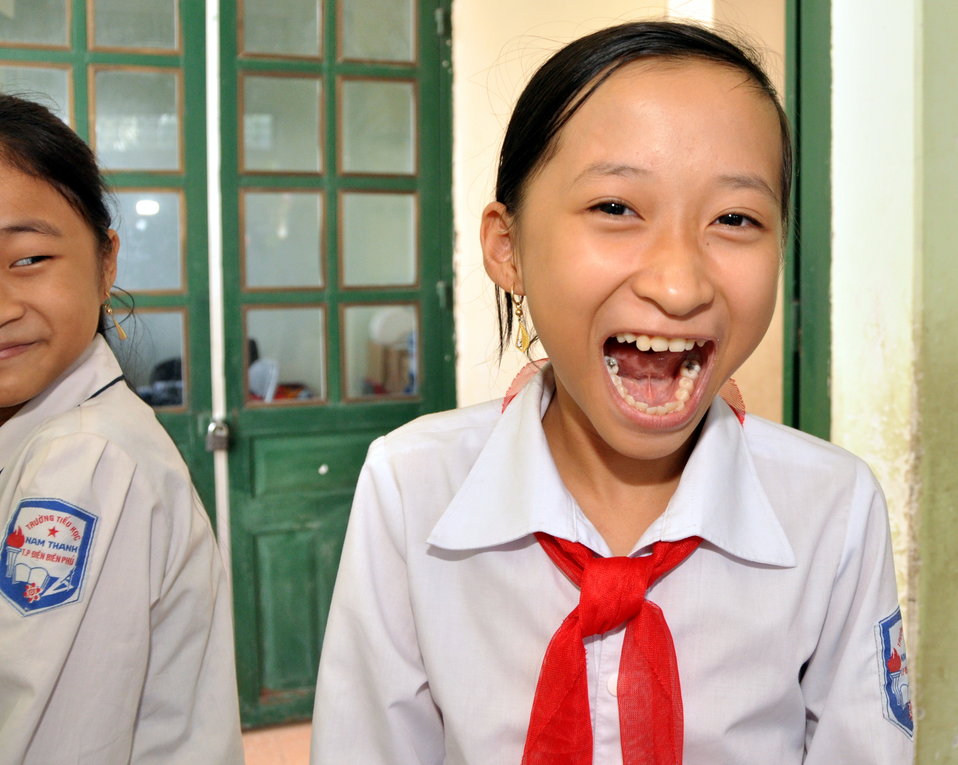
School children receive a dose of deworming medicine in Dien Bien